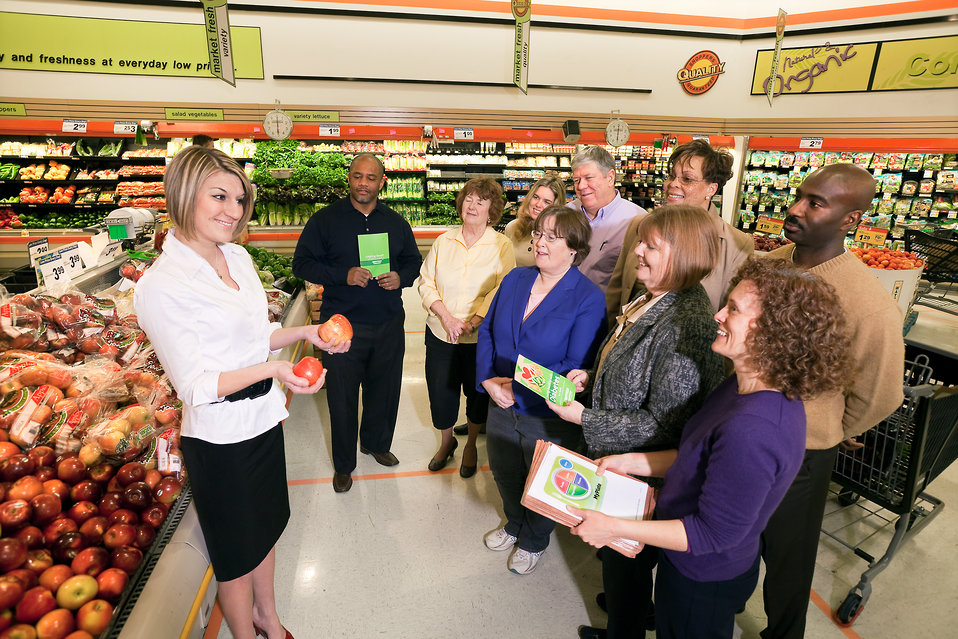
At Shoppers Food Warehouse stores, people can learn better nutrition and ways of living with diabetes through a program called “Eating Healthy With Diabetes.” Registered dietitian and president-elect of the Maryland Dietetic Association Jessica Kiel (left) encourages shoppers to use the U.S. Department of Agriculture’s (USDA) ChooseMyPlate.gov interactive tools, which use USDA Agricultural Research Service (ARS) national nutrient data to make better, healthier food choices on Dec. 28, 2011.